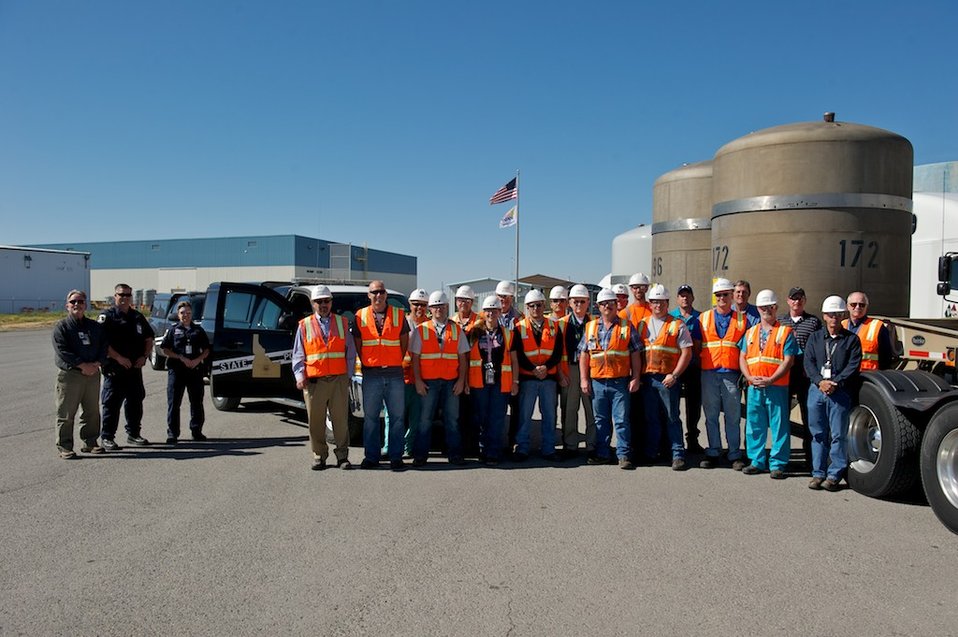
The Department of Energy Announces Major Cold War Legacy Waste Cleanup Milestone

Shipping crew.

The U.S. Department of Energy today (September 27, 2011) announced that the Waste Isolation Pilot Plant (WIPP) received its 10,000th shipment of transuranic (TRU) waste over the weekend. This marks an important milestone in DOE’s mission to clean up the country’s Cold War legacy.

WIPP is a DOE facility designed to safely isolate defense-related TRU waste from people and the environment. Waste temporarily stored at sites around the country is shipped to WIPP and permanently disposed in rooms mined out of an ancient salt formation 2,150 feet below the surface. WIPP is located 26 miles outside of Carlsbad, N.M.